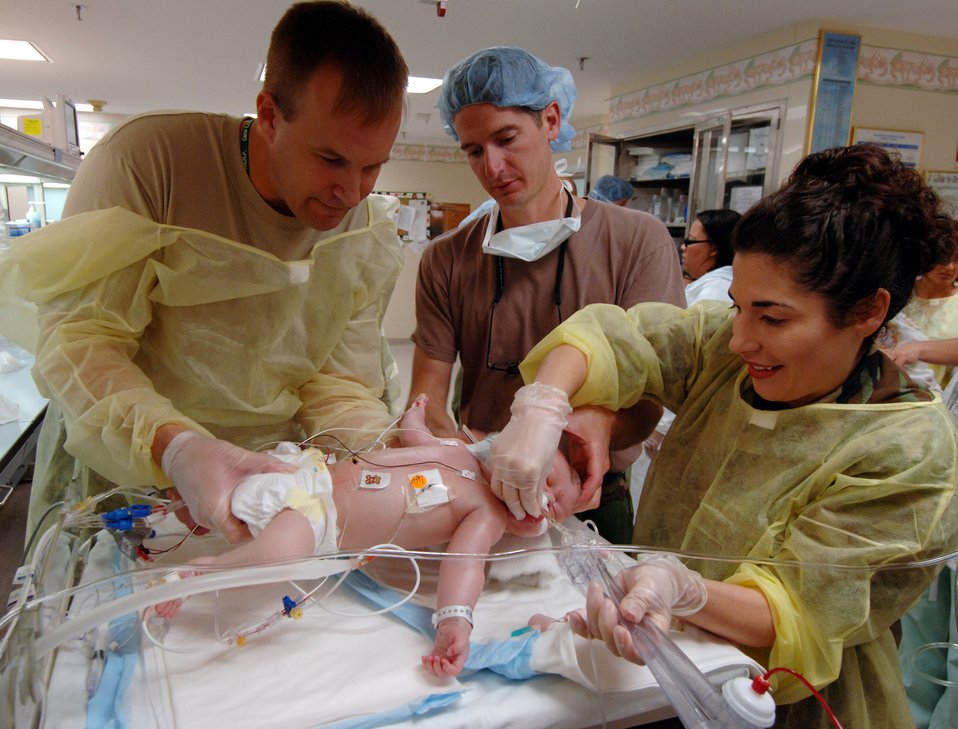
ECMO medical team transports newborn from Puerto Rico

(From left) Army Lt. Col. Mark Croley and Lt. Col. Christopher Coppola and Maj. Melissa Tyree prepare 3-day-old Stuart Parker for surgery to place him on a transportable Extracorporeal Membrane Oxygenation unit on July 21 in San Juan, Puerto Rico. An ECMO team comprised Air Force and Army medical specialists from the Wilford Hall Medical Center at Lackland Air Force Base, Texas, flew to Puerto Rico to transport Stuart to San Antonio for more advanced care. Colonel Croley and Major Tyree are neonatal doctors and Colonel Coppola is a pediatric surgeon at the Wilford Hall Medical Center.